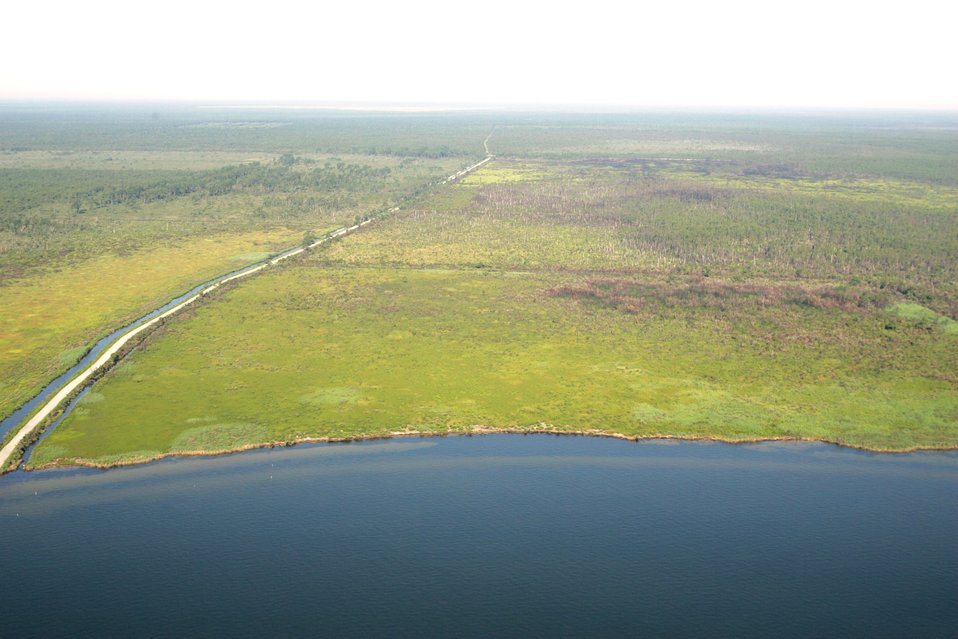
Point Peter aerial photo

The east side of Alligator River National Wildlife Refuge on Pamlico Sound is ground zero for the Climate Change Adaptation Project. Artificial oyster reefs are being installed just offshore, and water control structures are being added to prevent salt water from shooting straight up the canal into the heart of the refuge.